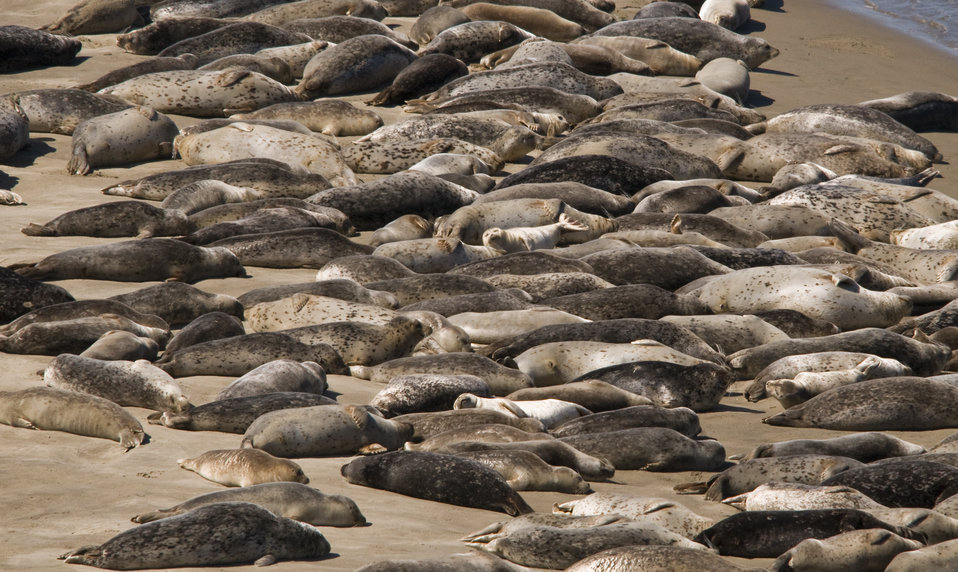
Harbor seals in Alsea Bay
Harbor Seals can be found year round on Oregon Islands National Wildlife Refuge